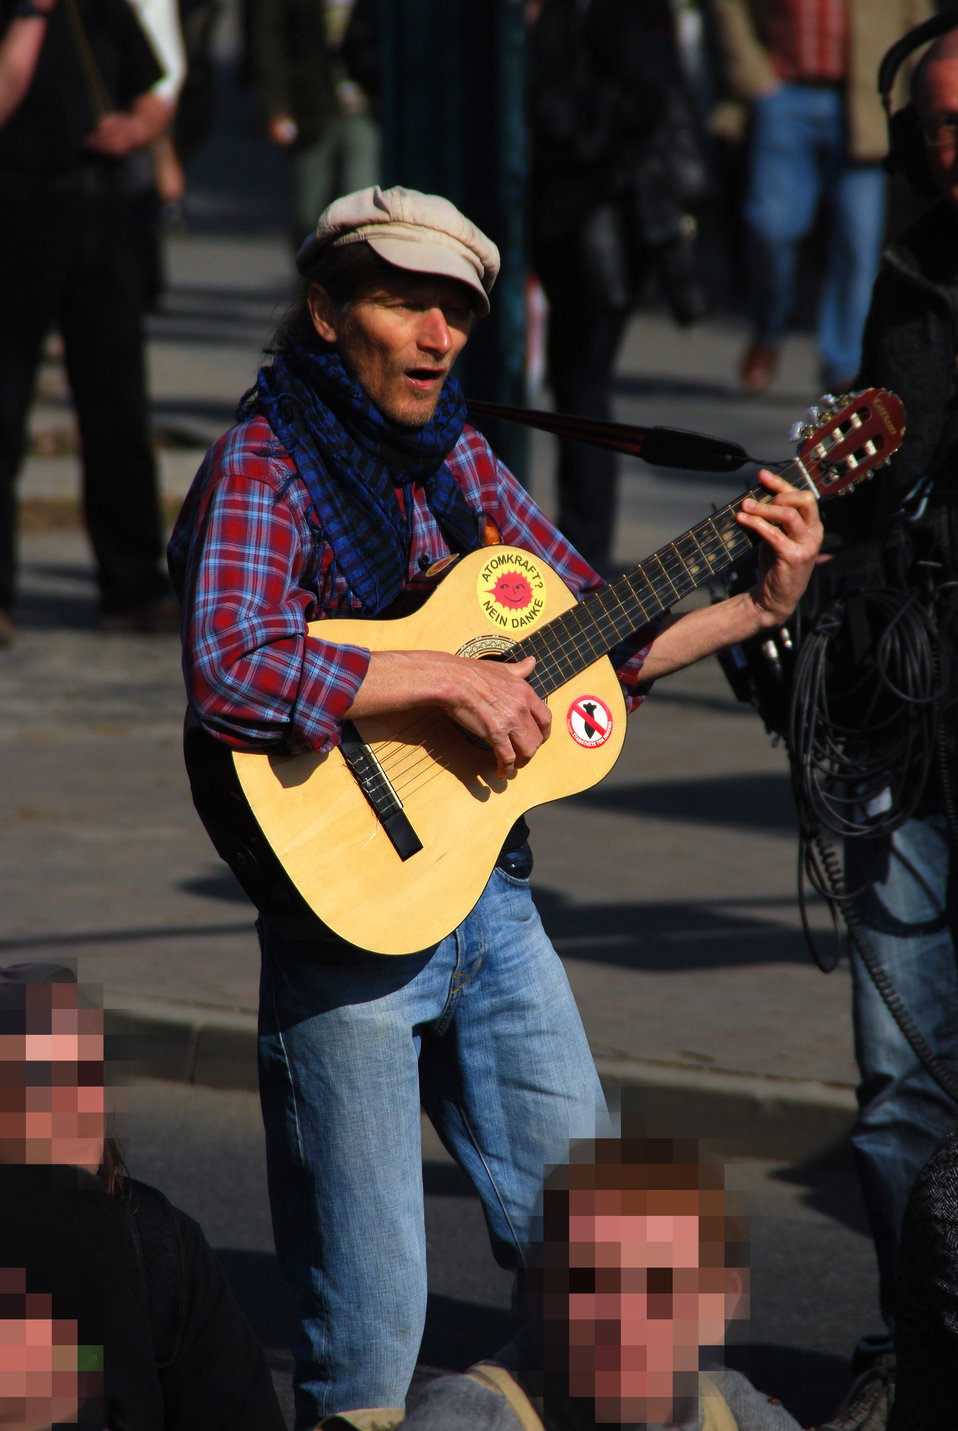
Proteste gegen den Nazi-Aufmarsch am 24.3.2012 in Frankfurt (Oder)